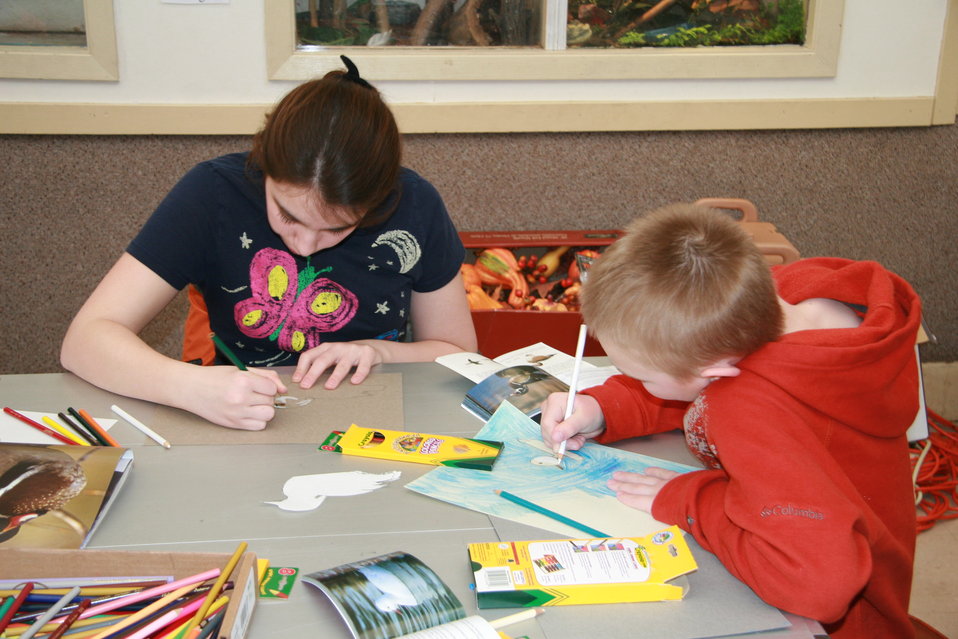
Jr. Duck Stamp Program in North Dakota

Students are also encouraged to include a conservation message on their entry forms along with their artwork.